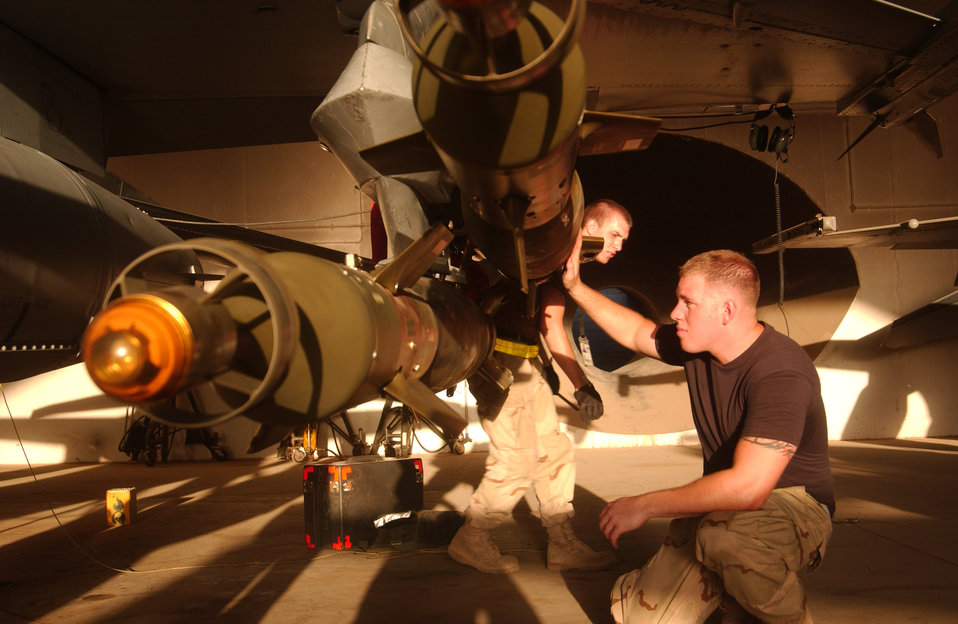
Upload

Senior Airman Steven Cross uploads laser-guided bombs onto an F-16 Fighting Falcon at Balad Air Base, Iraq, on July 8. Airman Cross is with the 421st Expeditionary Aircraft Maintenance Unit.